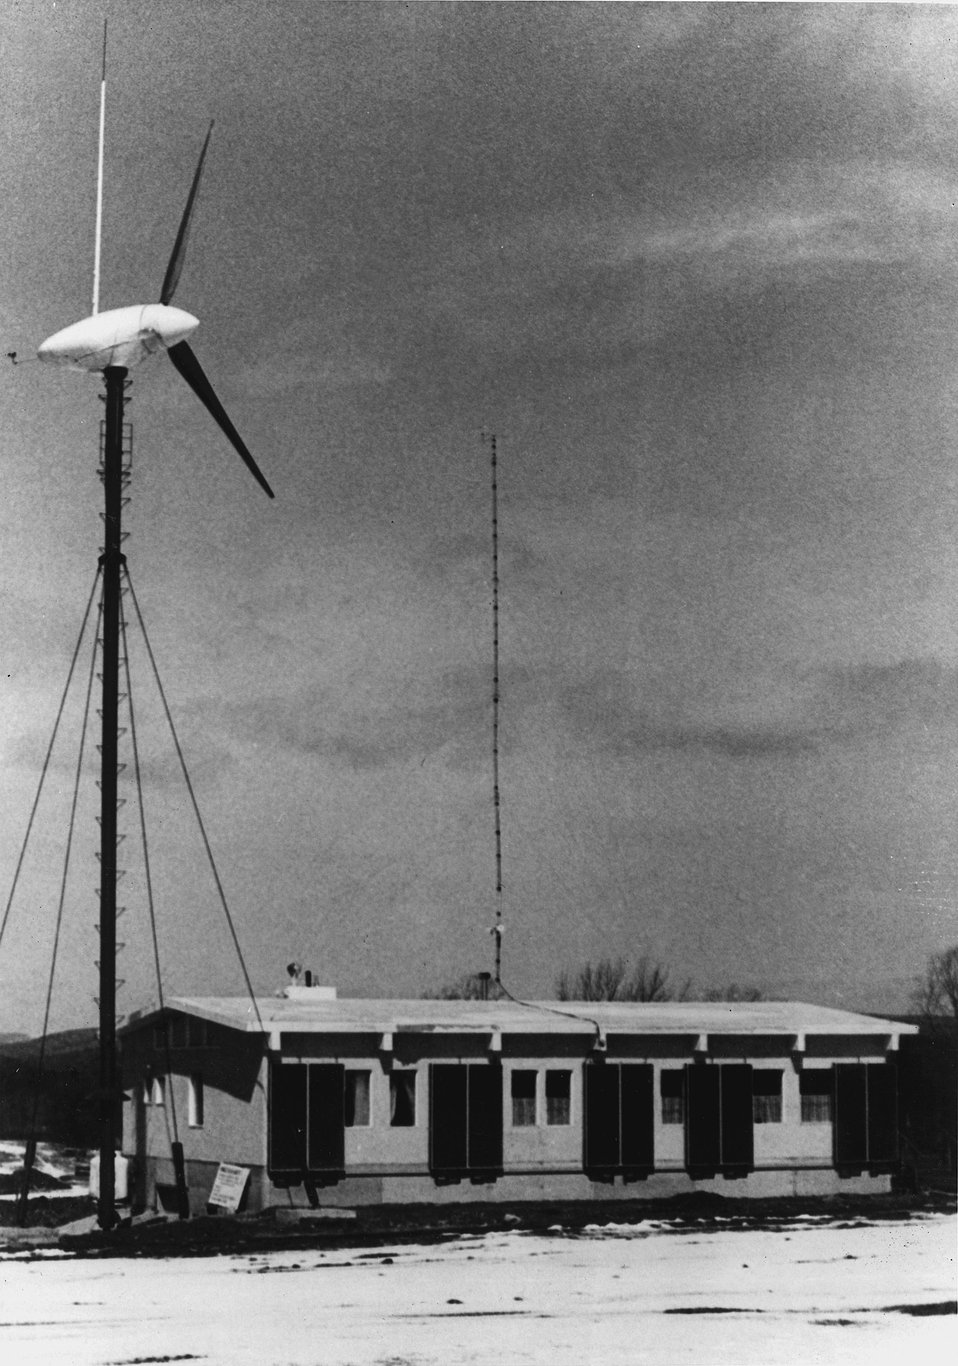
A three-bladed wind turbine and a solar heating system together provide about 80 percent of the heat needed by this experimental home at the University of Massachusetts, Amherst. c. 1977